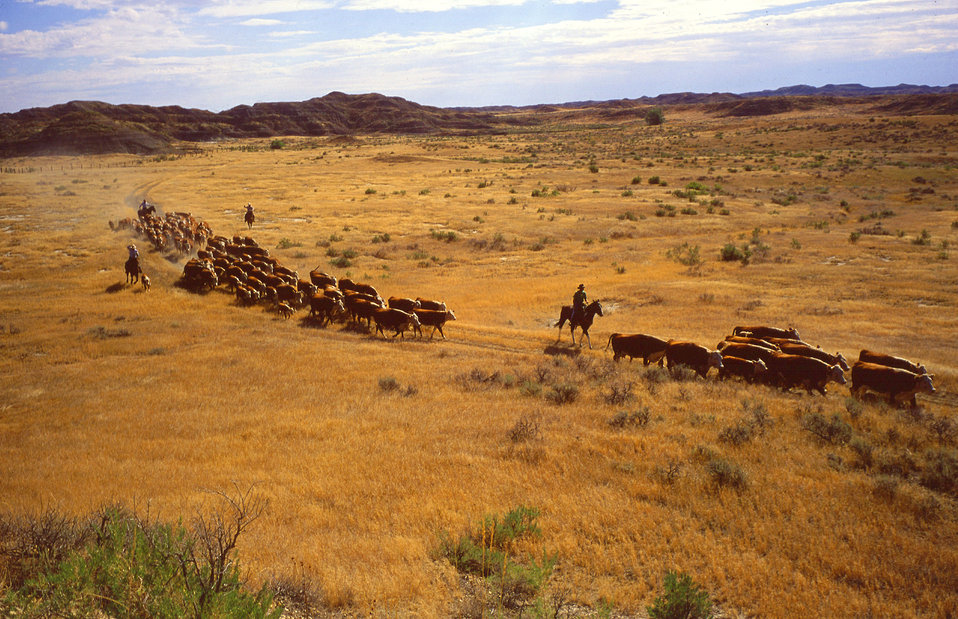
A cattle roundup occurs at the U.S. Department of Agriculture (USDA) Agricultural Research Service (ARS) Fort Keogh Livestock and Range Research Station in southeastern Montana. At this station, one of the largest in the world of its kind, researchers help to ensure a plentiful supply of meat while protecting the rangeland environment.